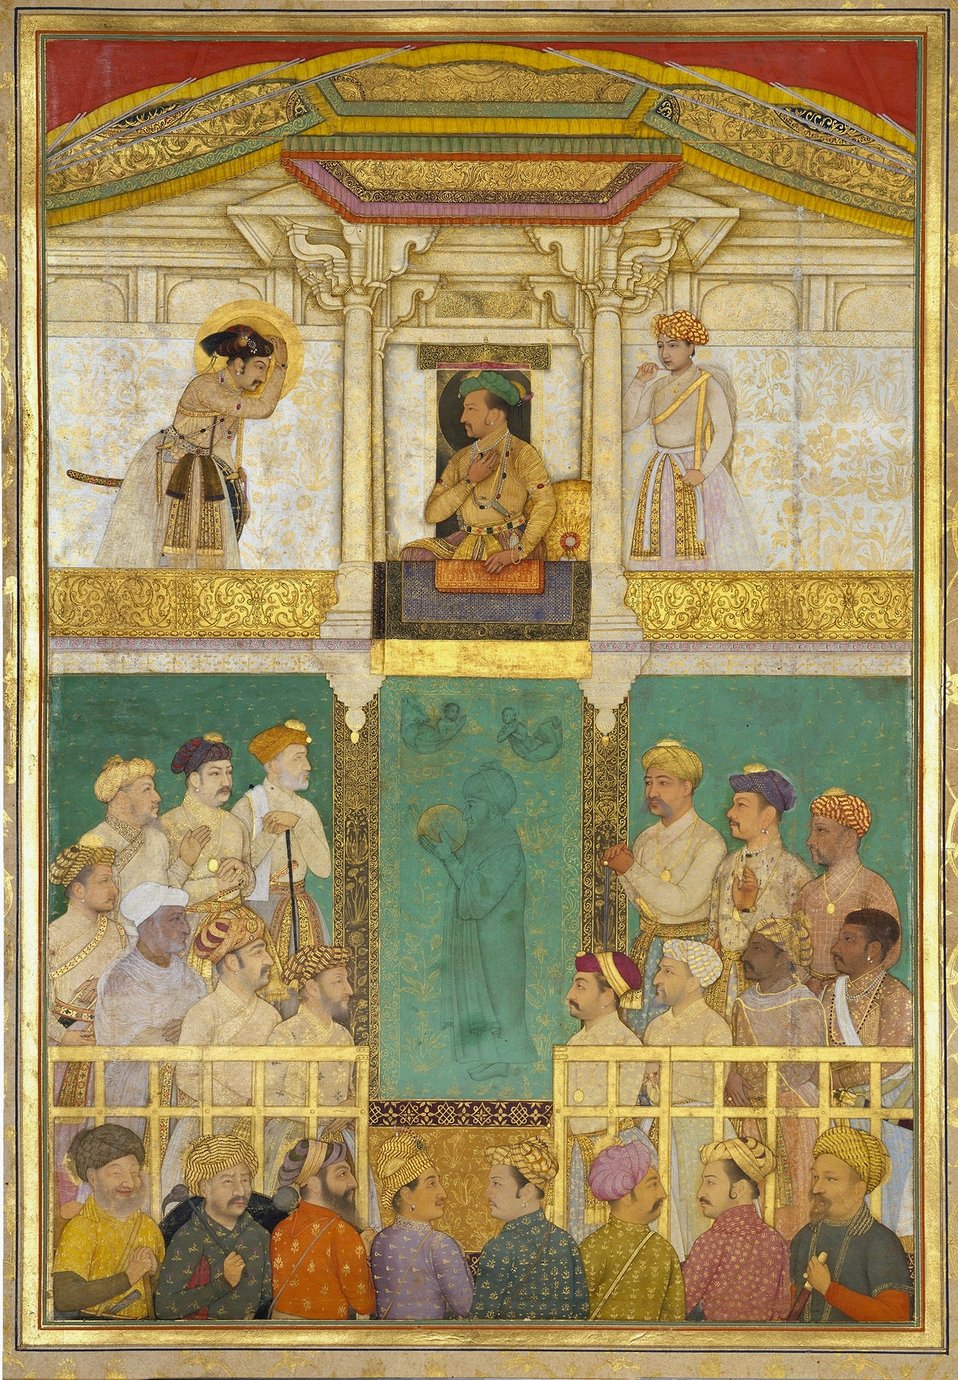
'Abid. Jahangir Receives Prince Khurram, Ajmer, April 1616 Folio 192v from the Windsor Padshahnama, ca. 1635-36 The Royal Library, Windsor Castle